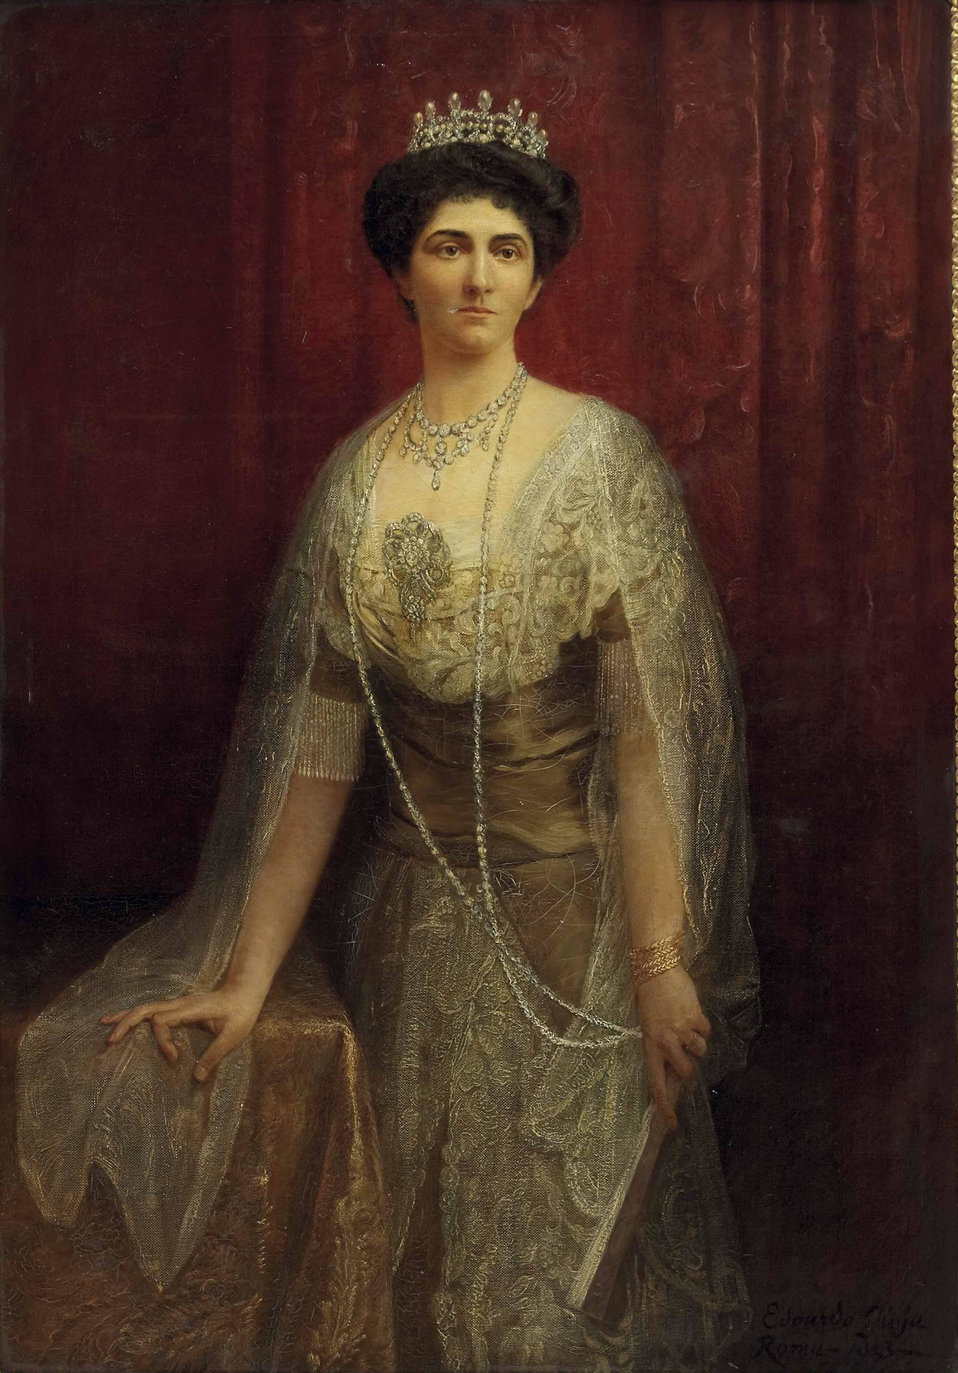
Eduardo Gioja Elena von Montenegro 1913